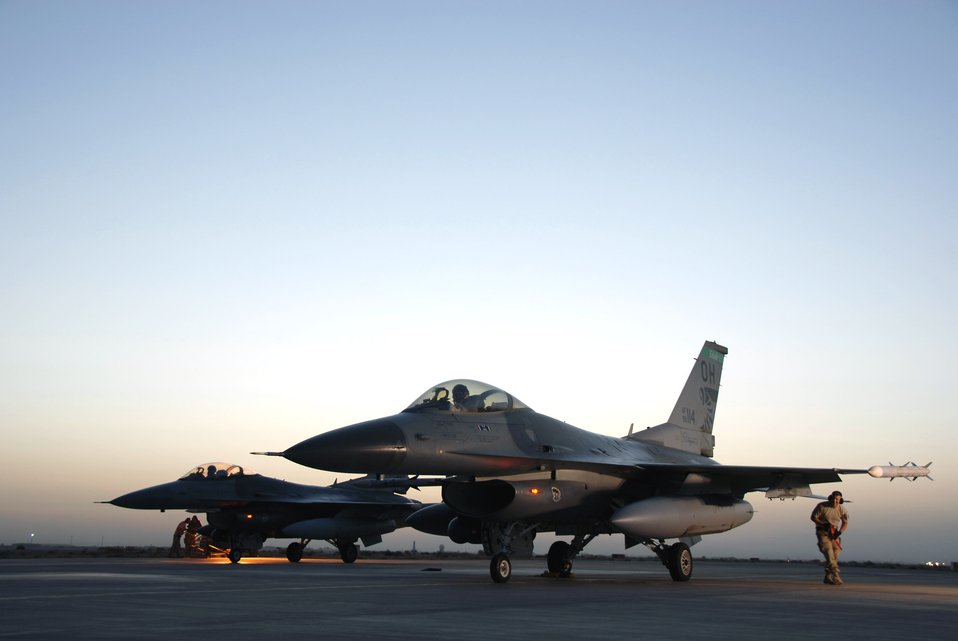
Combat sortie safety

Col. Scott Dennis and Lt. Col. Rob Webb wait at the end of the runway June 9 while weapons loader, Tech. Sgt. Mike Przyiecki